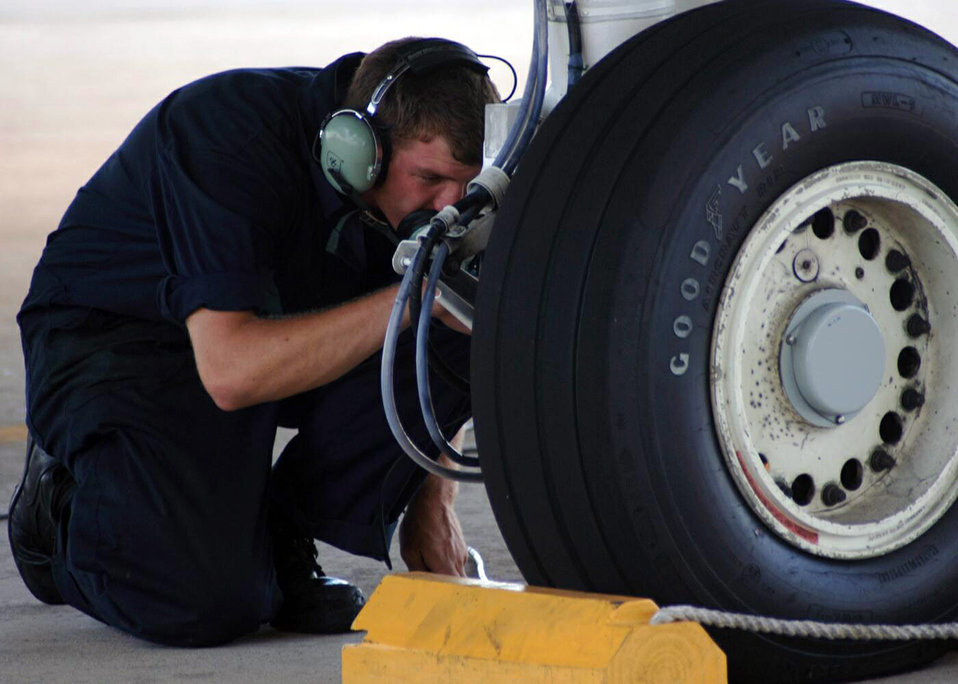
Thunderbolt takeoff

DAVIS-MONTHAN AIR FORCE BASE, Ariz. -- Airman 1st Class Tyler Young conducts a preflight inspection on the A-10 Thunderbolt II. Airman Young is assigned to the 355th Aircraft Maintenance Squadron here.